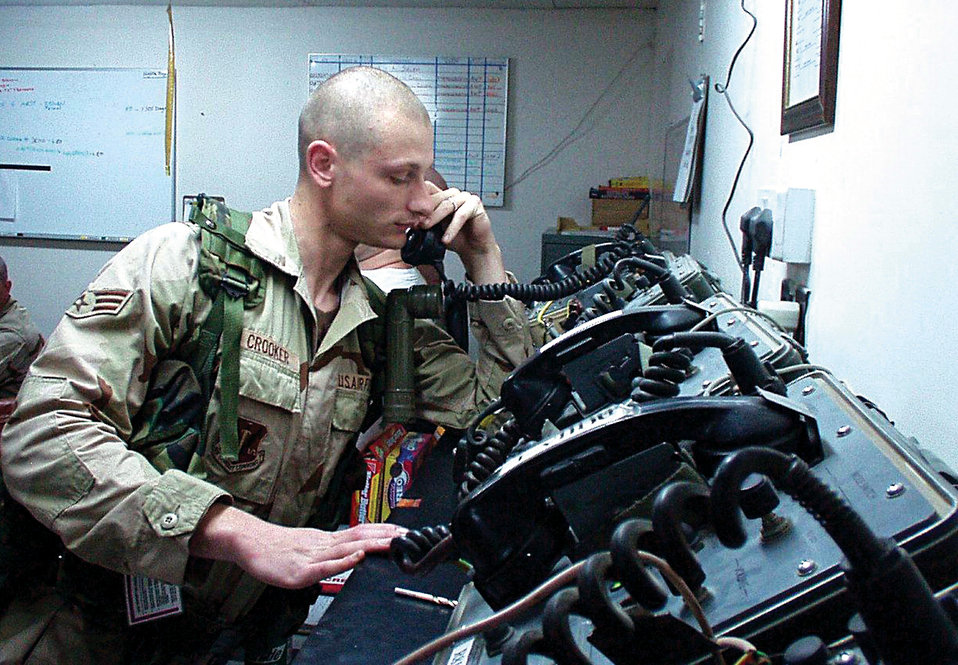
Can you hear me now?

OPERATION SOUTHERN WATCH (AFPN) -- Senior Airman Adam Crooker from the 729th Air Control Squadron checks a line on a point-to-point telephone unit. The 729th ACS from Hill Air Force Base, Utah, has been deployed since November as part of Air and Space Expeditionary Force 8.